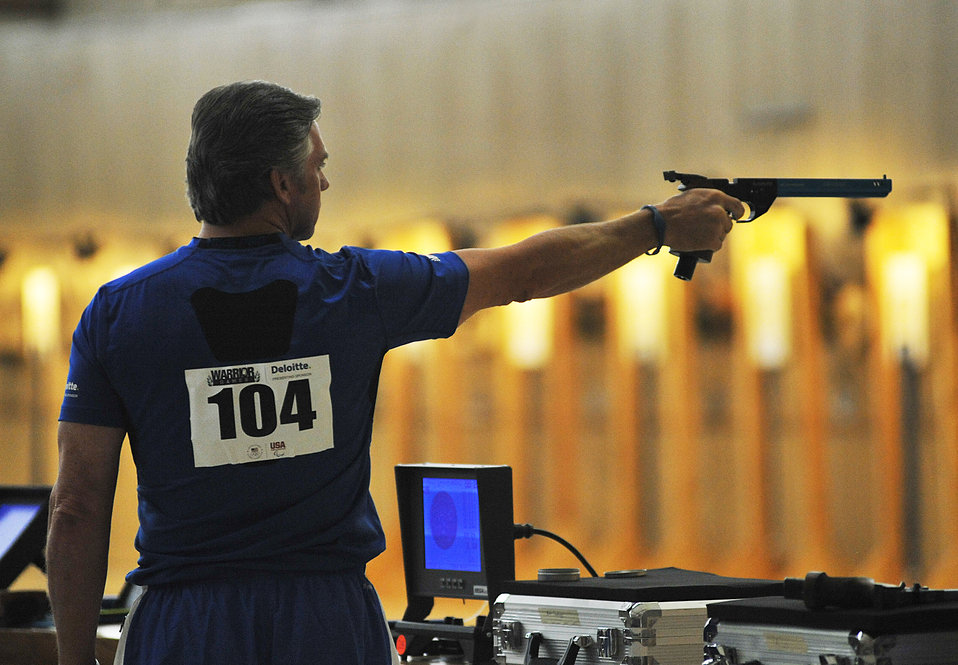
Warrior Games

Ken Gestring aims his pistol at his target during the shooting event of the 2012 Warrior Games at the Olympic Training Center in Colorado Springs, Colo., May 3, 2012. Gestirng is with the Air Force team.